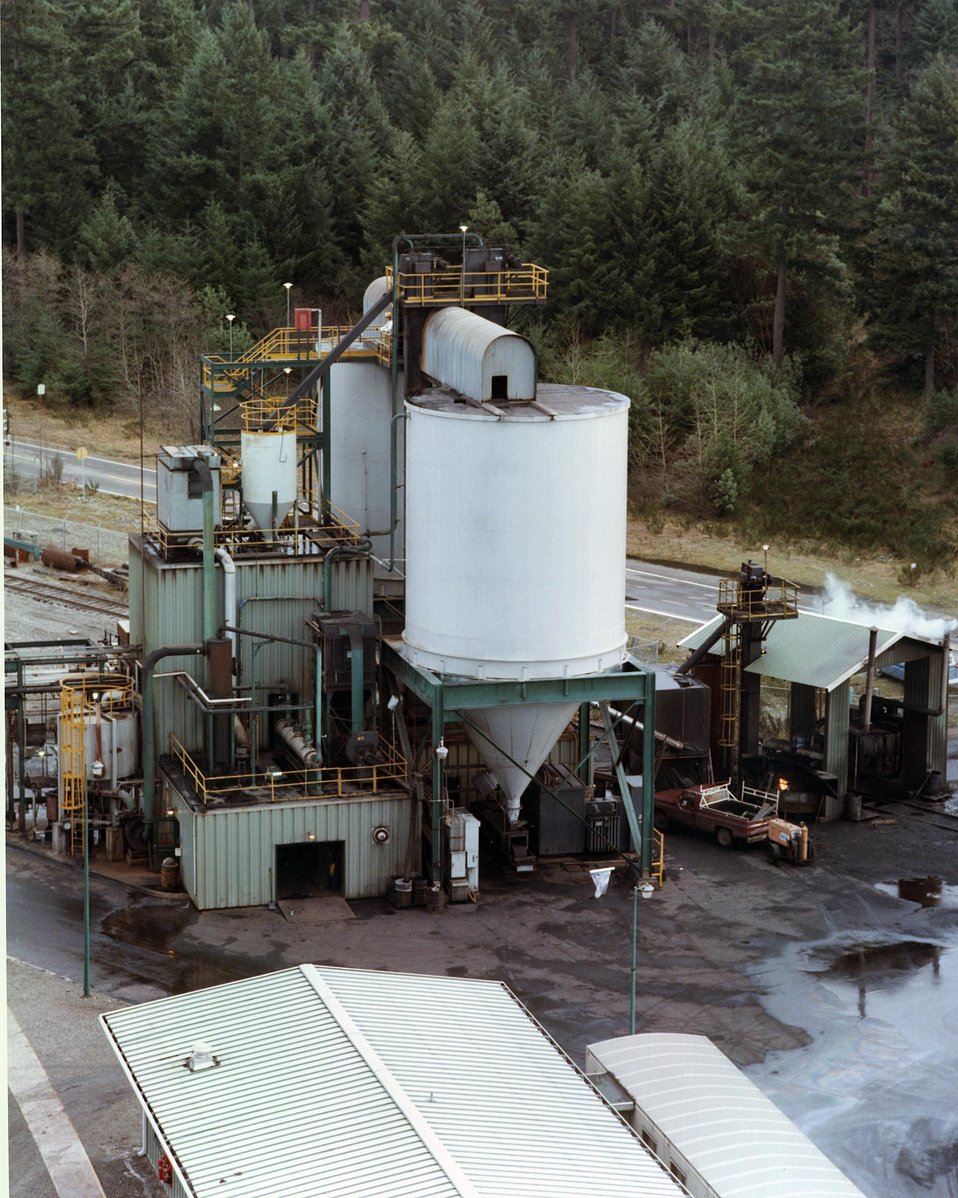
COAL STORAGE AND GRINDING, INCLUDING SLURRY PREPARATION.